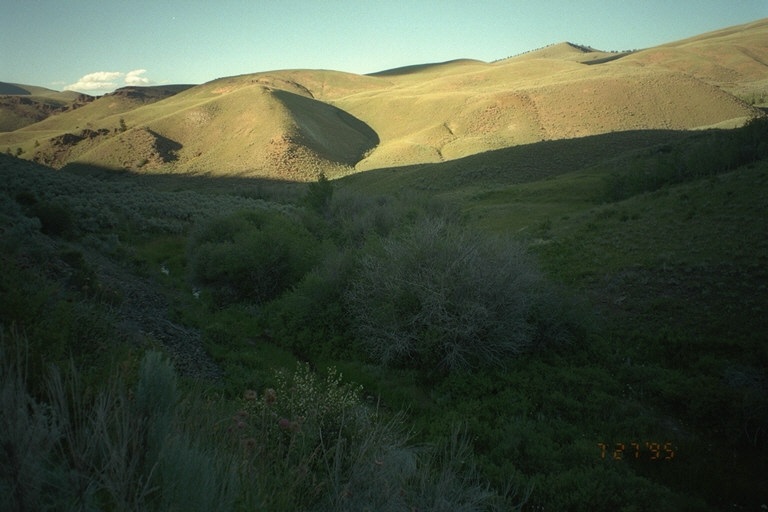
Riparian area Public Lands Salmon Field Office UCSC Upper Columbia Salmon Clearwater District